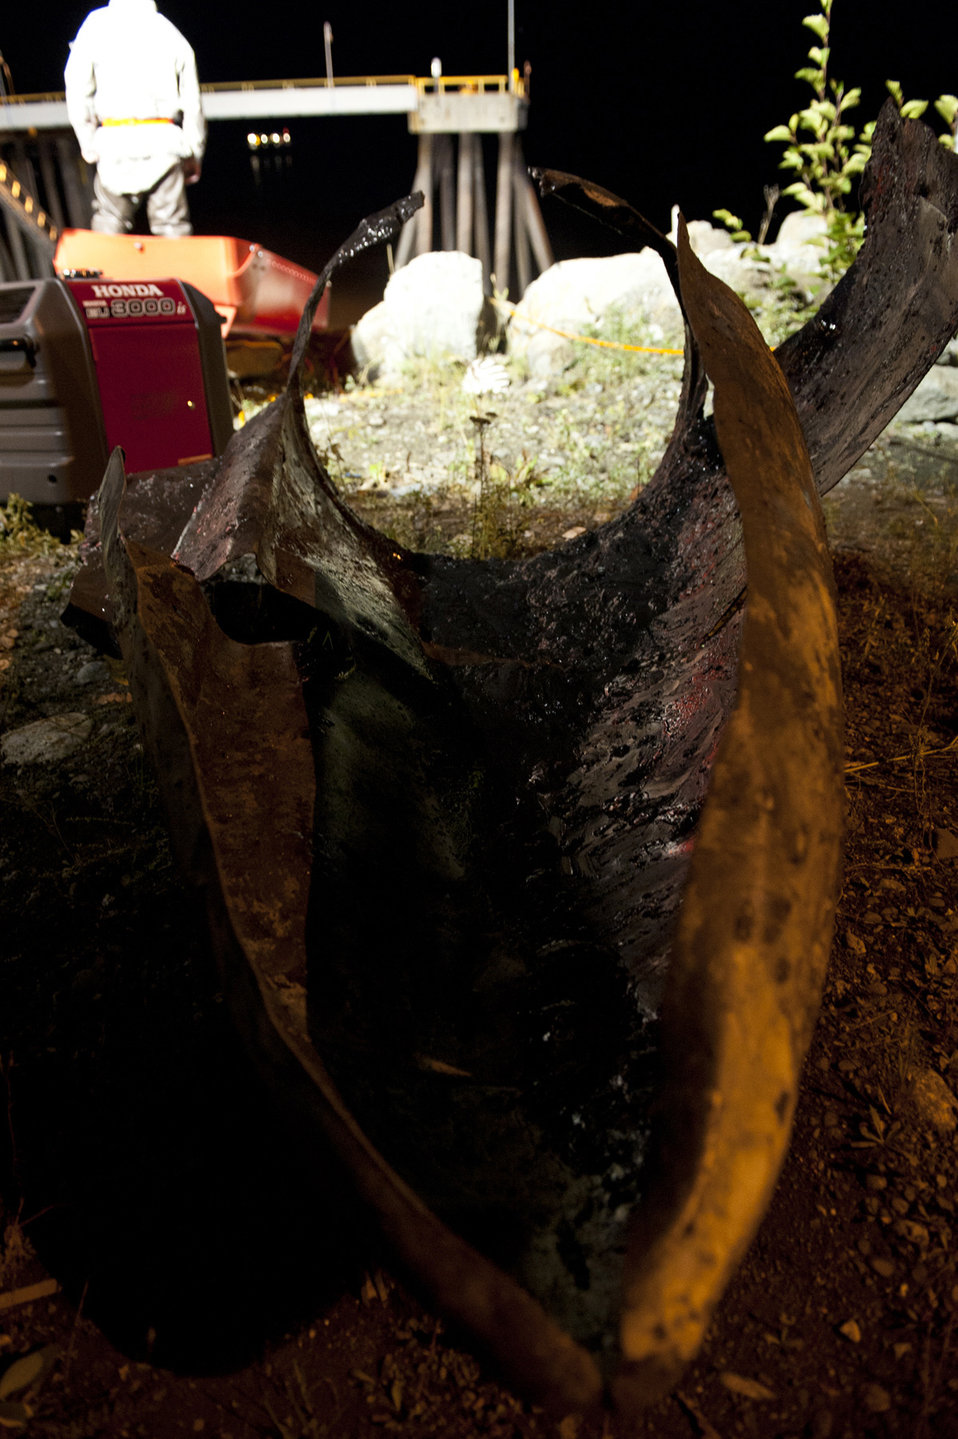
Phantom in the water

The head piece to an F-4 Phantom II fuel tank recovered by the Joint Base Elmendorf-Richardson Crash Recovery Unit and the Anchorage Port Authority from the Port of Anchorage, Alaska, Sept. 18, 2012. The Anchorage Port Authority and the Joint Base Elmendorf Richardson Crash Recovery Unit, under the 3rd Maintenance Squadron, are removing an F-4 fuel tank that is embedded in the harbor bank.